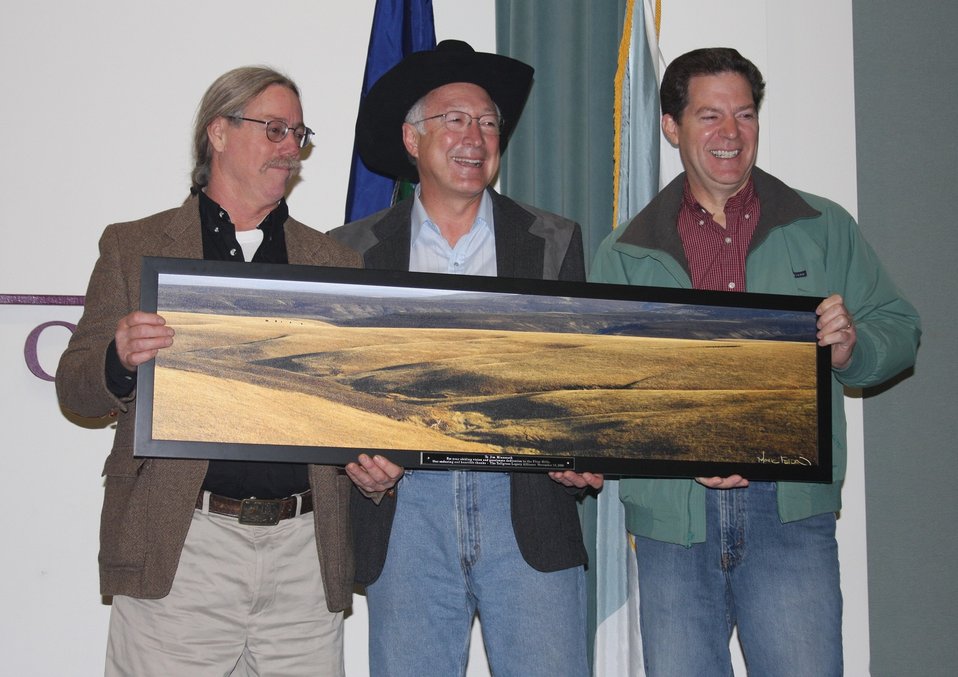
Award Ceromony

From left to right: Jim Minnerath, Kansas Partners for Fish and Wildlife Program; Secretary of the Interior Ken Salazar, and Kansas Governor-elect Sam Brownceck